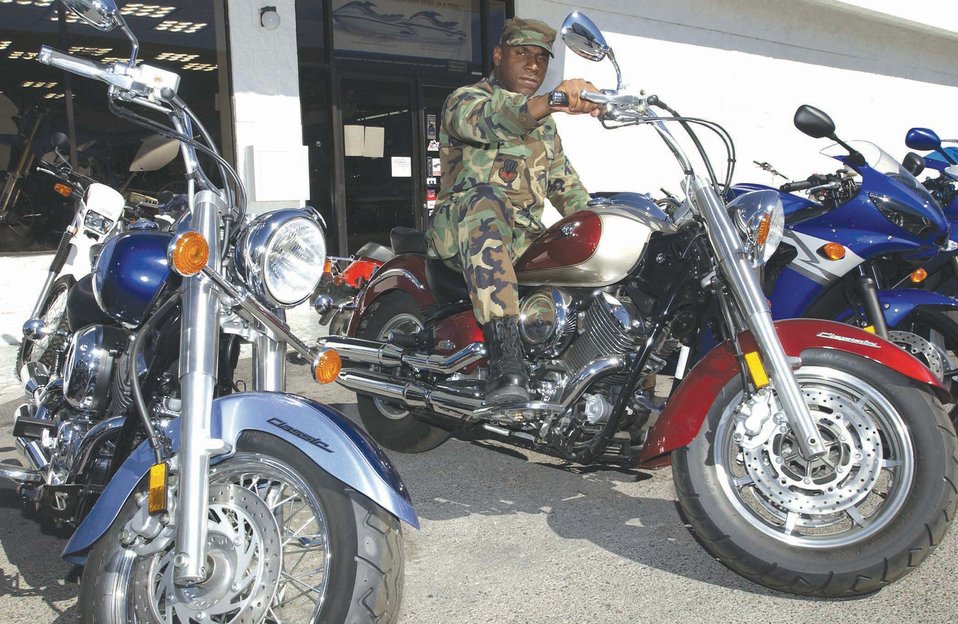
Price is right for Nellis Airman

NELLIS AIR FORCE BASE, Nev. -- Senior Airman Roger Thomas won the showcase showdown on the